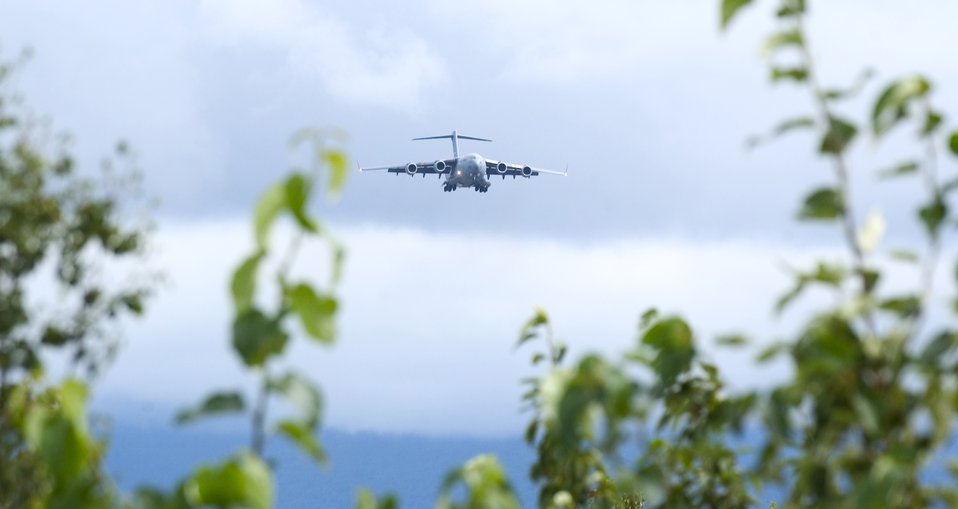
Arctic Thunder

A C-17 Globemaster III from Altus Air Force Base, Okla., was one of 11 military aerial demonstrations at the Arctic Thunder air show and open house at Elmendorf Air Force Base, Alaska, on Aug. 12. C-17s are scheduled to arrive at Elmendorf next summer.